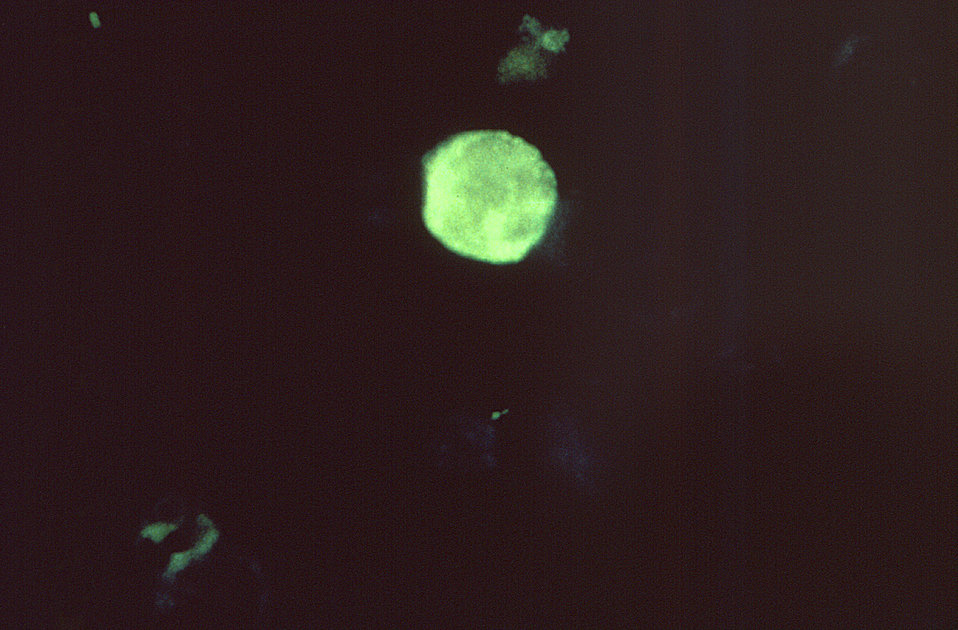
Using the fluorescent antibody (FA) staining technique, this photomicrograph revealed the cumulative effect of the Epstein-Barr virus on cells of unknown origin.